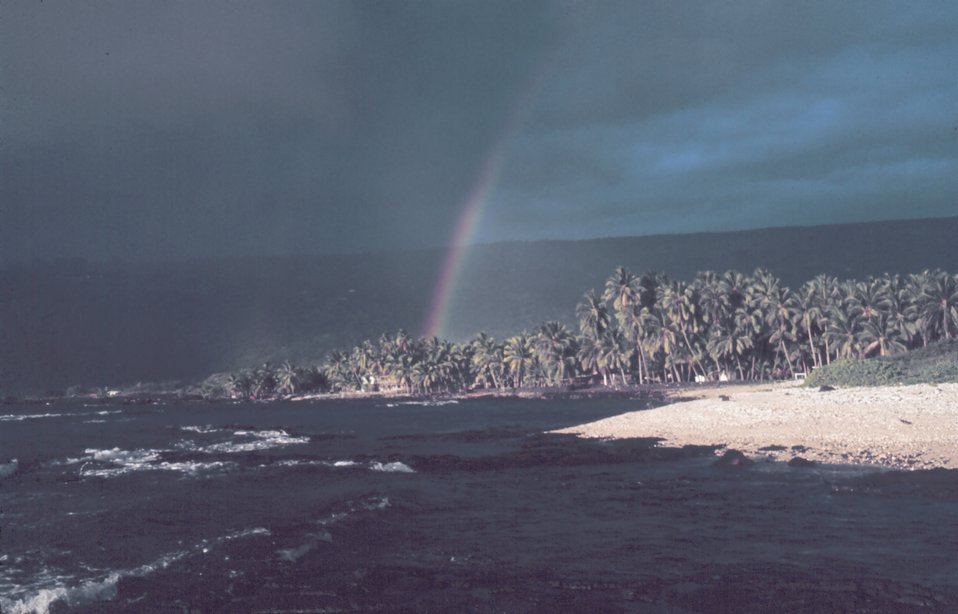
A rainbow over palm trees on the coast